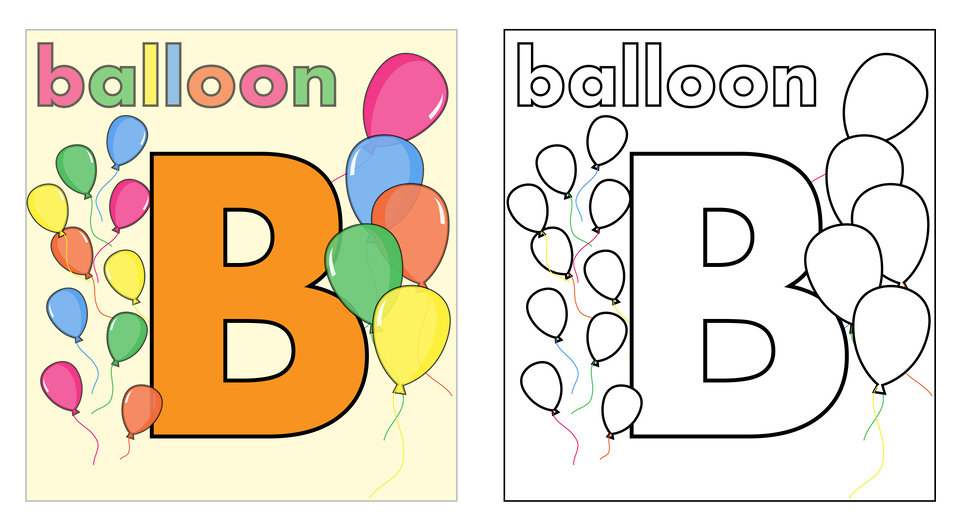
Balloon coloring book page

Alphabet letter b colorful balloons coloring book page.